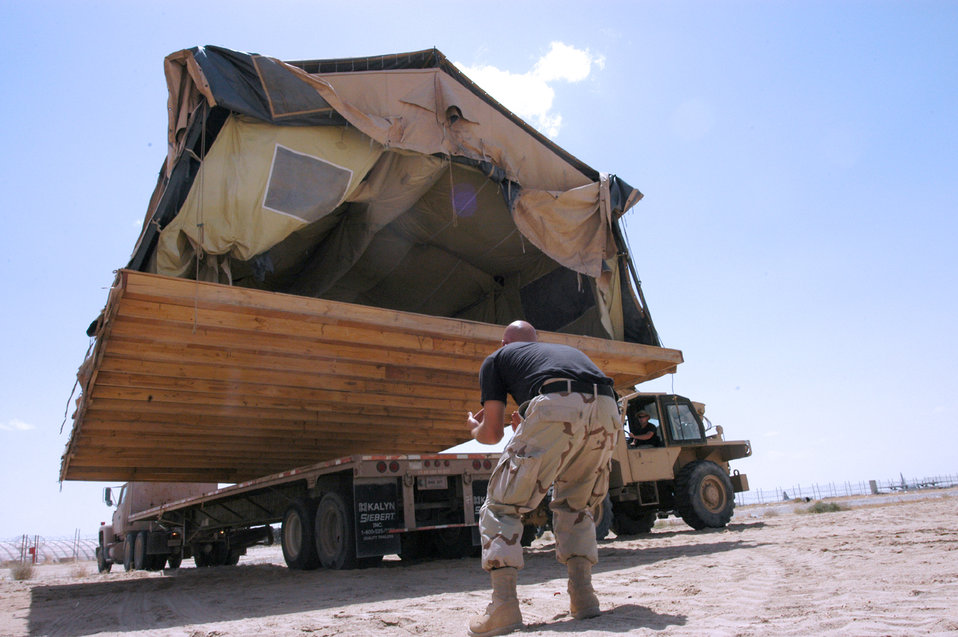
Moving tents eases with ingenuity

SOUTHWEST ASIA -- Staff Sgt. Aaron Carroll guides Tech. Sgt. Raymond Saunders as he uses a forklift to move a tent with its floor intact onto the back of a flatbed truck April 27.